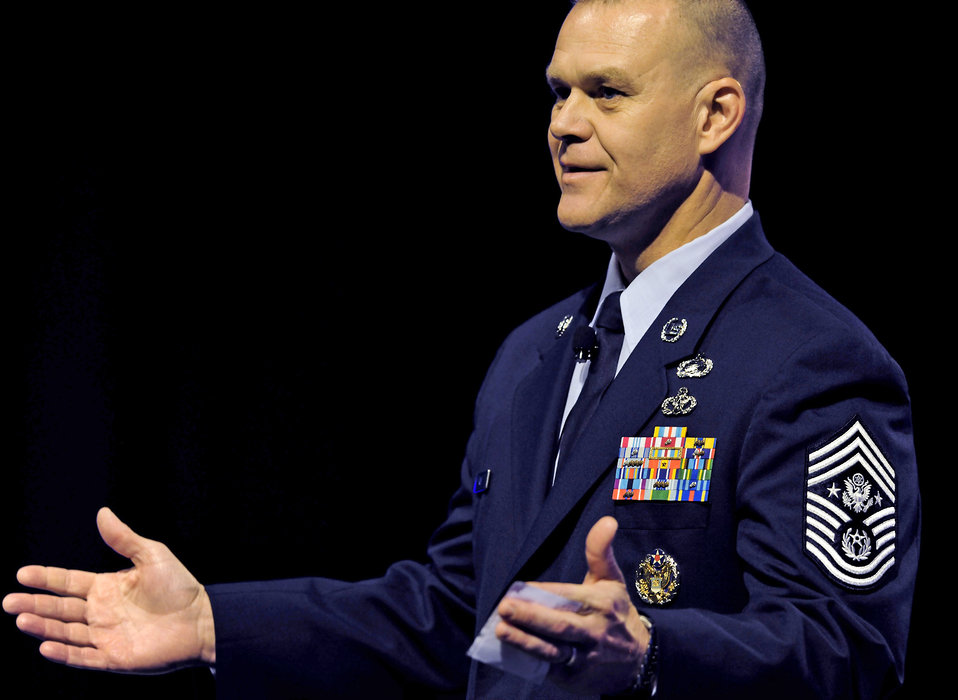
CMSAF shares perspective about readiness, development, resiliency

Chief Master Sgt. of the Air Force James Roy speaks to an audience of hundreds attending the Air Force Sergeants Association Professional Airmen's Conference Aug. 17, 2010, in Atlanta. Some of his key points were joint/coalition readiness, deliberate development and resiliency among Airmen and their families.